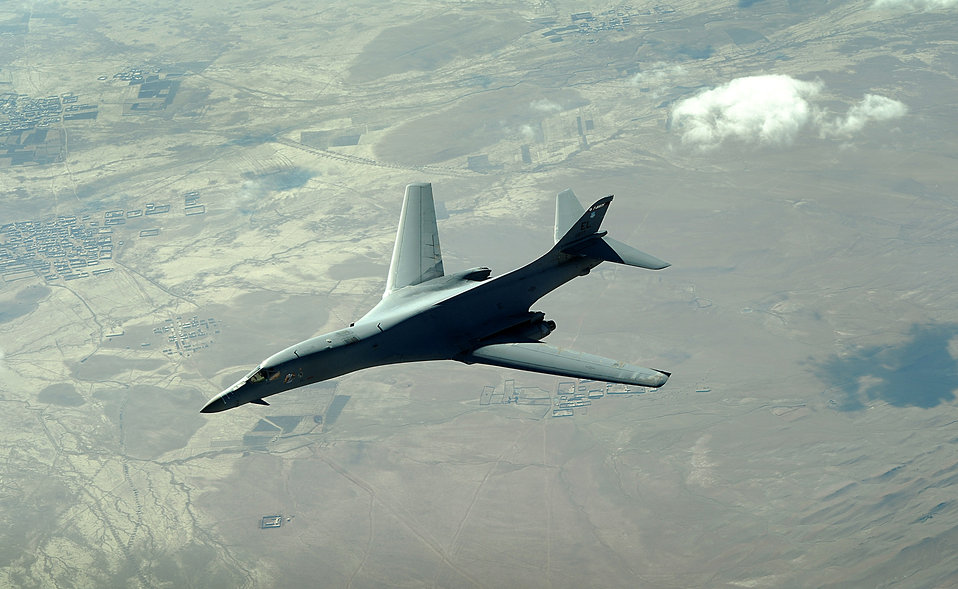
Dec. 29 airpower summary: B-1Bs fly combat patrol missions

A B-1B Lancer flies a combat patrol mission over Afghanistan recently. The B-1B carries the largest payload of both guided and unguided weapons in the Air Force inventory and can rapidly delivery massive quantities of precision and non-precision weapons against any adversary.